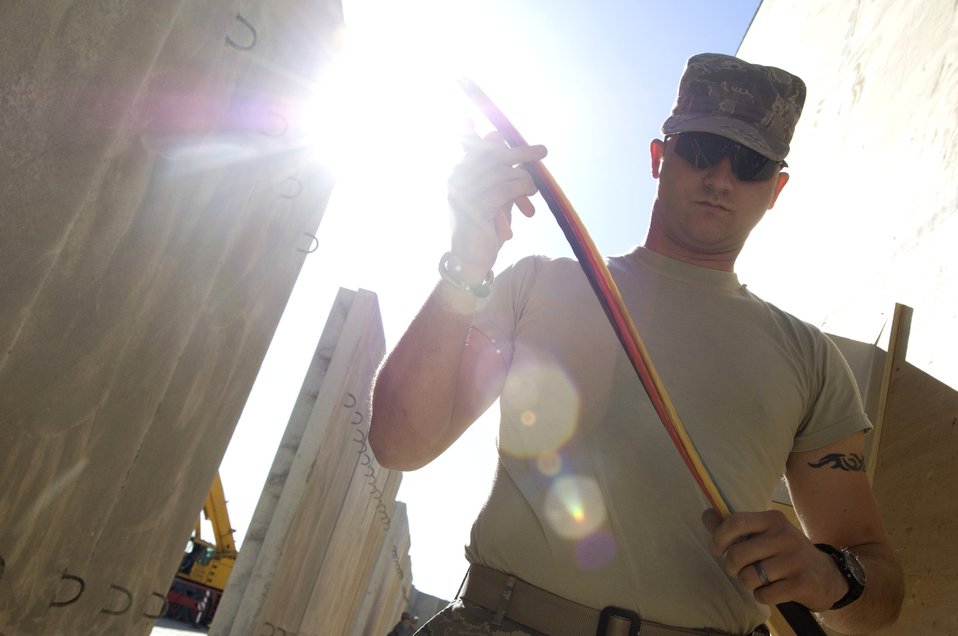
Air Force engineers improve Marine quality of life in Iraq

Senior Airman Jimmy White strips cable for the newly-constructed convoy briefing rooms here, a $65,000 project, Nov. 22 at Al Asad Air Base, Iraq. Airman White, a 557th Expeditionary REDHORSE electrician, is deployed from Barksdale Air Force Base, La.